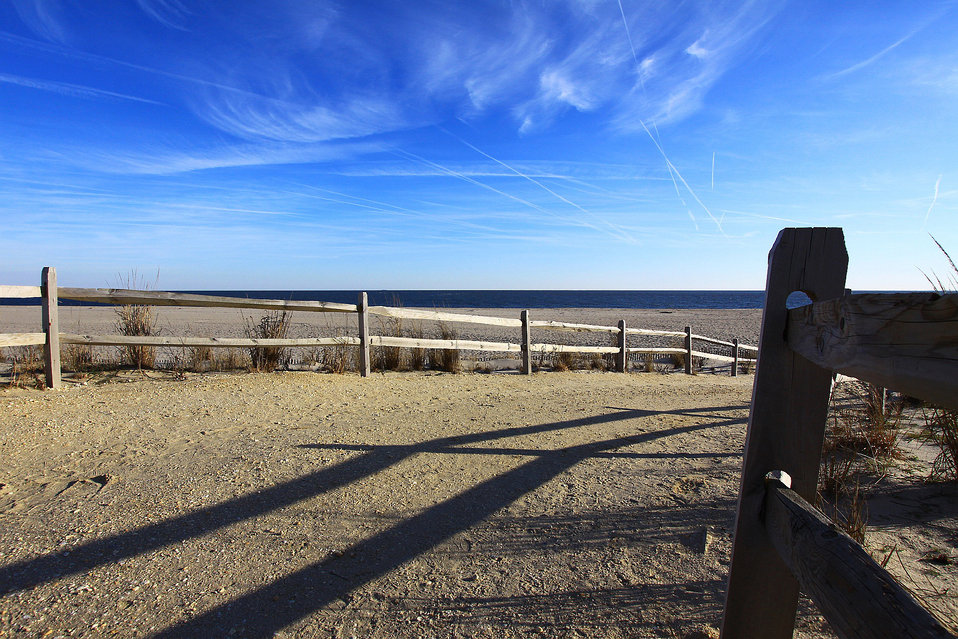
Beach access

Southern jersey shore.